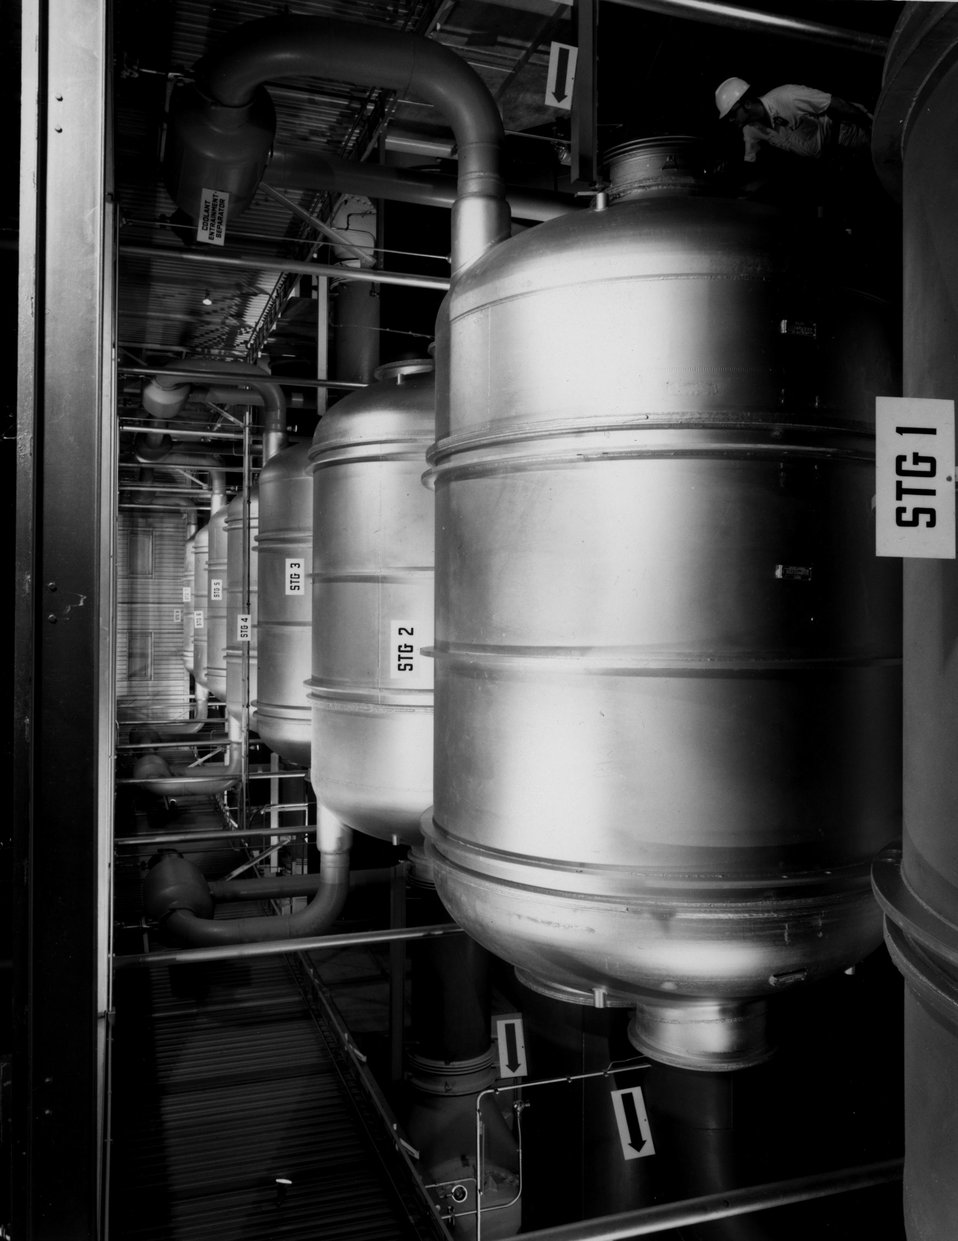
The gaseous diffusion process. c. 1972